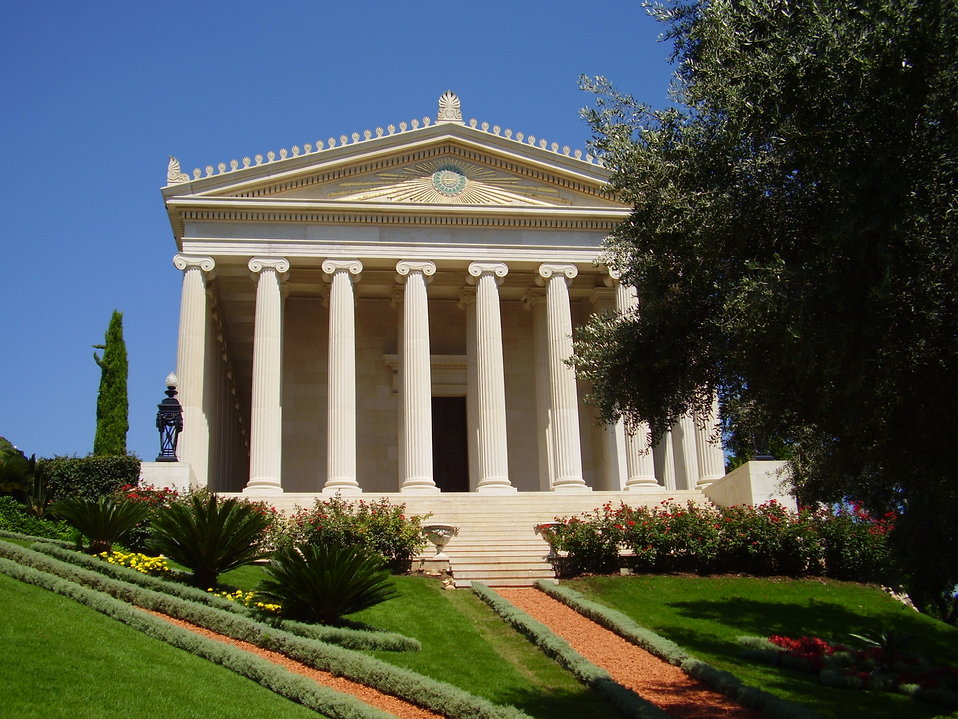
This is the International Bahá'í Archives Building on Mount Carmel, Haifa, Israel. It is part of the Bahá'í World Centre.